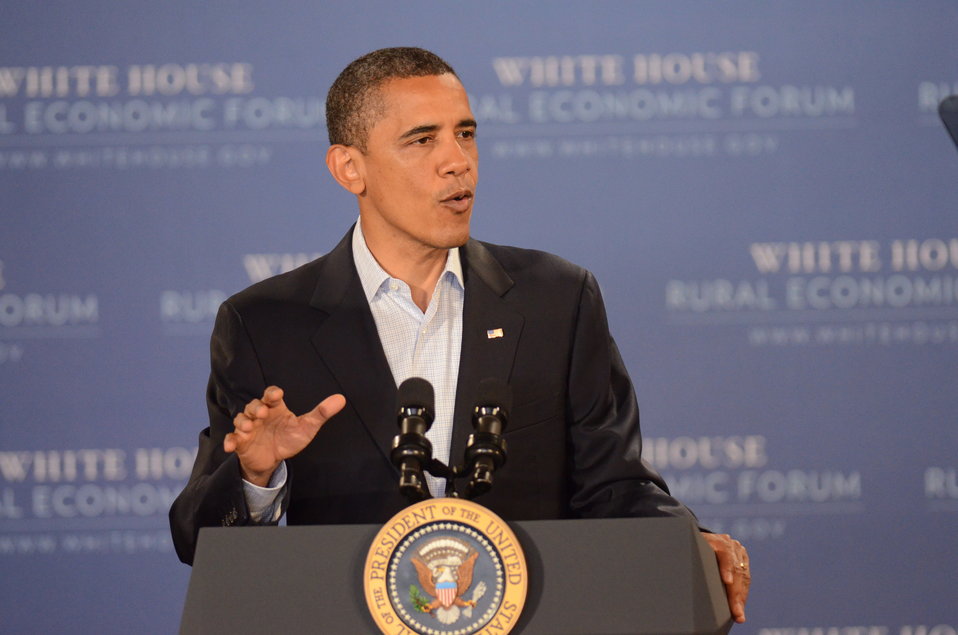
President Barack Obama speaking at the Northeast Iowa Community College, for a White House Rural Economic Forum on Tuesday, Aug. 16, 2011. The President’s visit will focus on agriculture’s contribution to the national economy, and how to create more jobs in rural America.